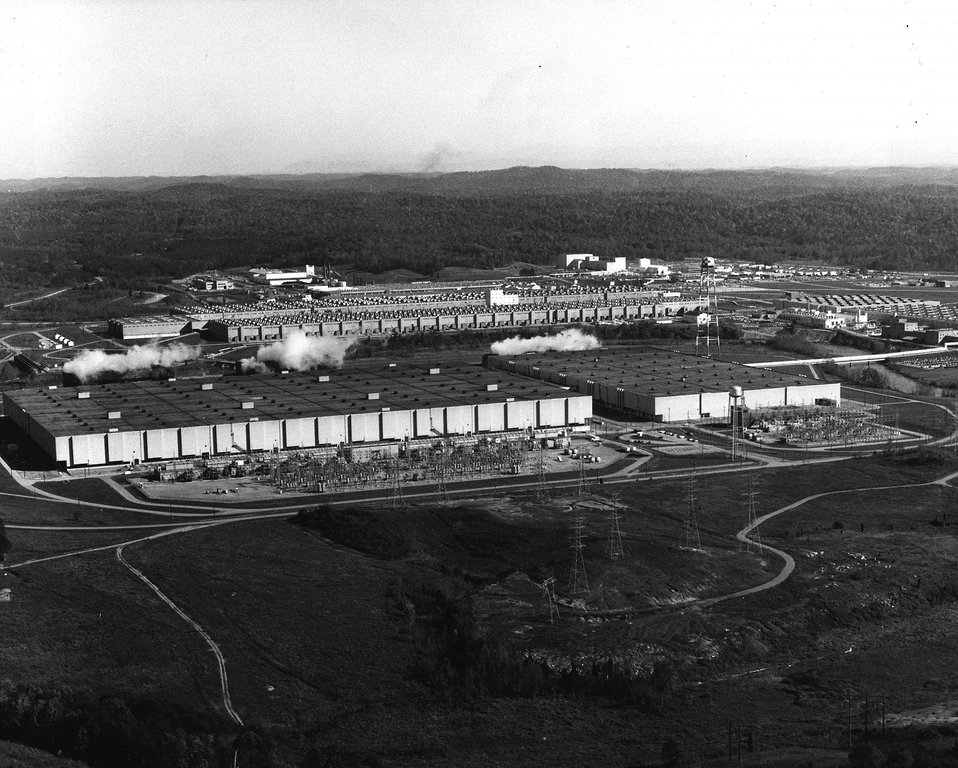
The Energy Research and Development Administration's Oak Ridge (Tenn.) Gaseous Diffusion Plant is the first such facility built in the wold for production of enriched uranium. The original gaseous diffusion process building 'K-25,' which is the U-shaped building, was constructed in 1943 and began operating in 1945, producing enriched uranium for the Manhattan Project of World War II. c. 1976